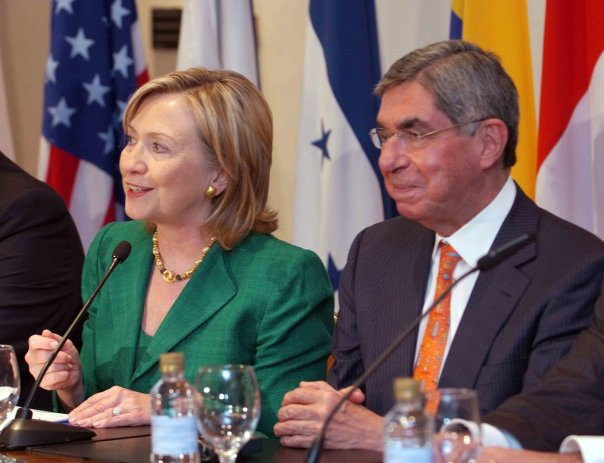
Secretary Clinton With Costa Rican President Oscar Arias

U.S. Secretary of State Hillary Rodham Clinton sits beside Costa Rican President Oscar Arias at the Pathways to Prosperity Conference in San José, Costa Rica, March 4, 2010.